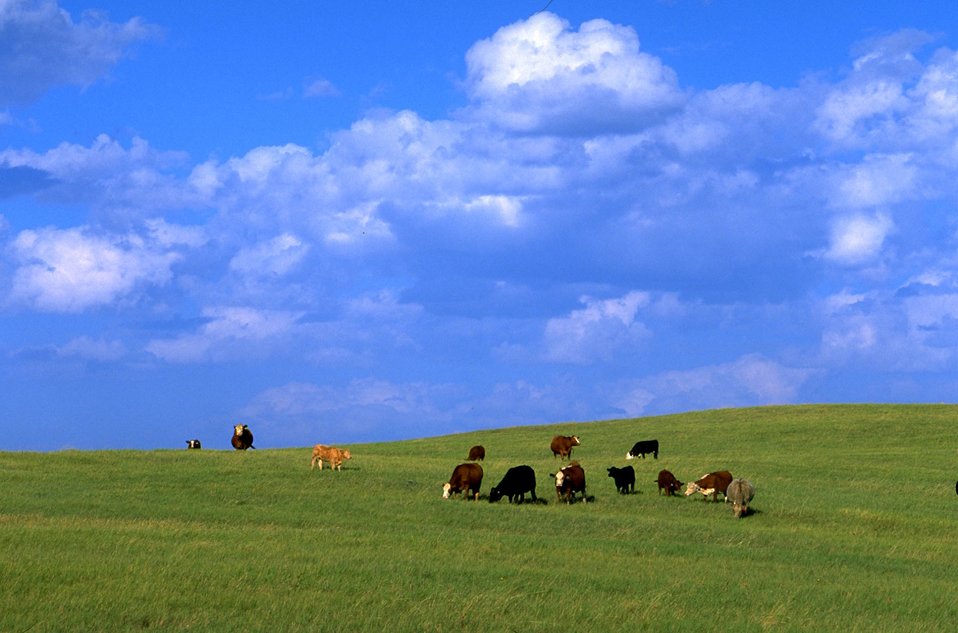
Grazing cattle